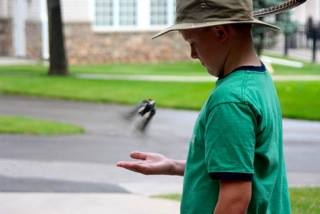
Tim Doerges, a D.C. Booth HNFH Hatchery Helper, releases a bird after helping band and identify it during a Hatchery Helper session.